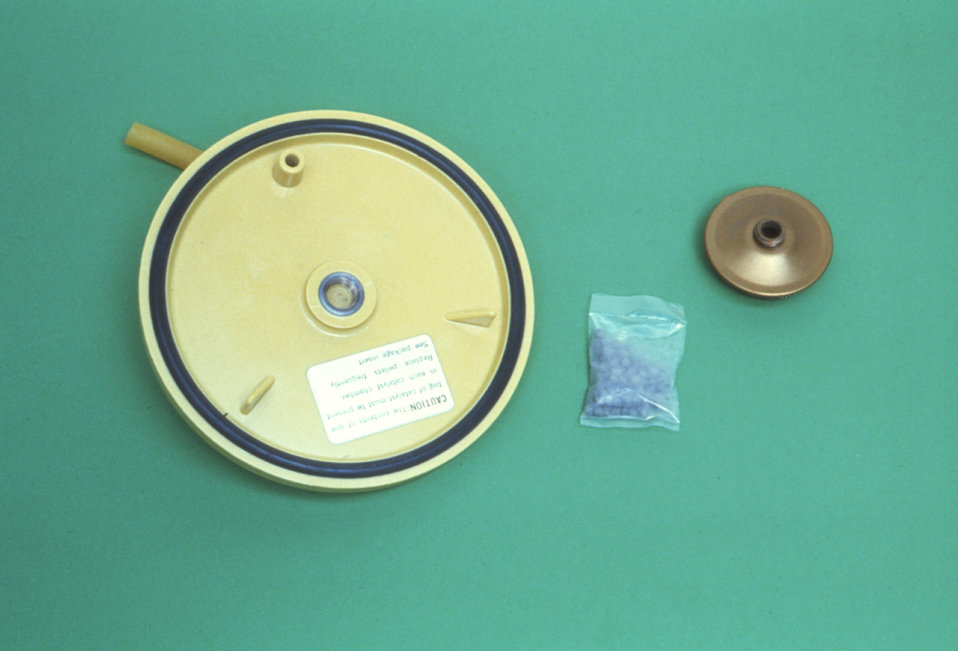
This is a BBL� lid to be used with an anaerobe jar showing the catalyst screen, and a measured amount of catalyst.